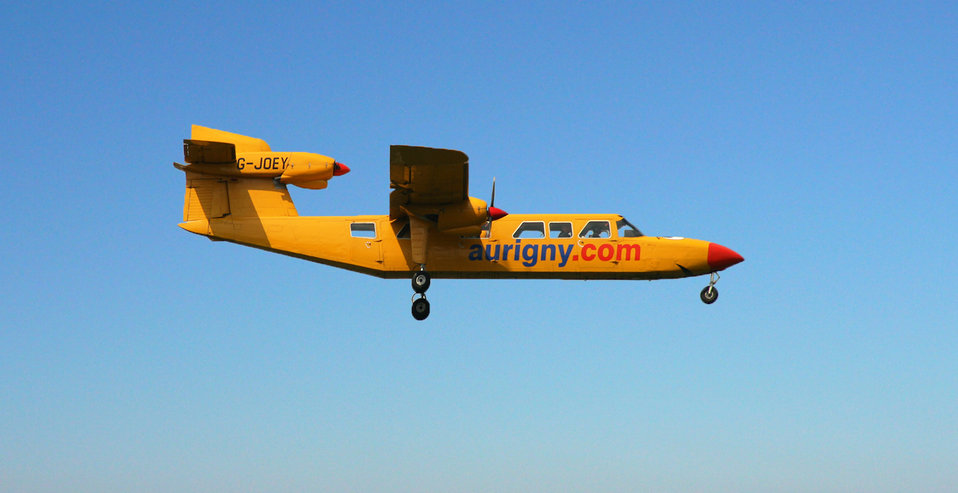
G-JOEY